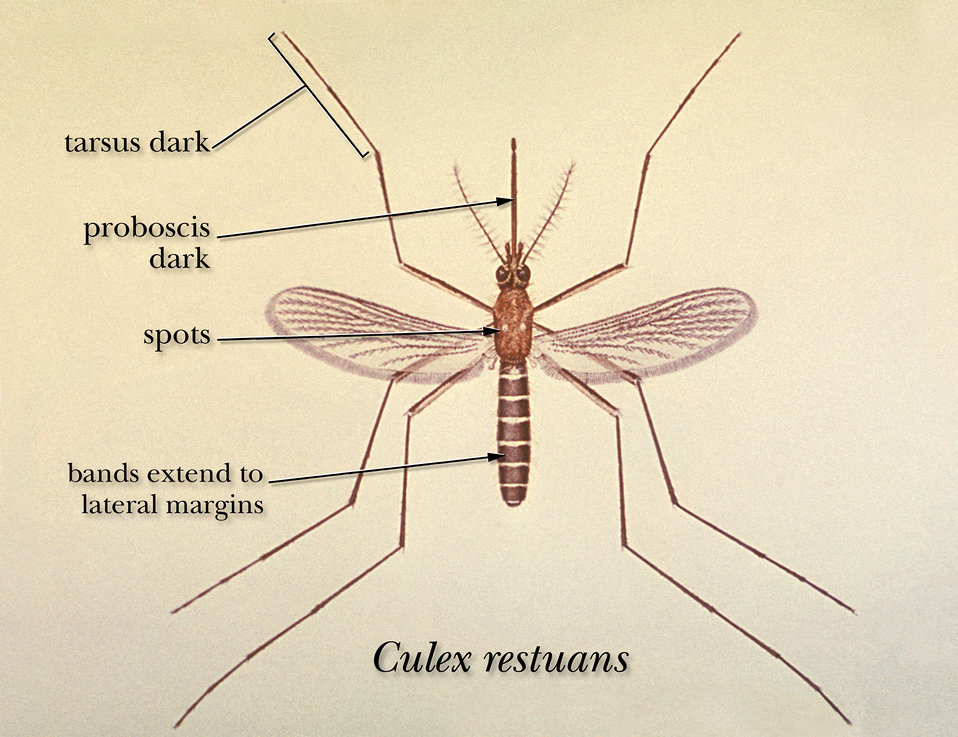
An illustration of a Culex restuans mosquito.